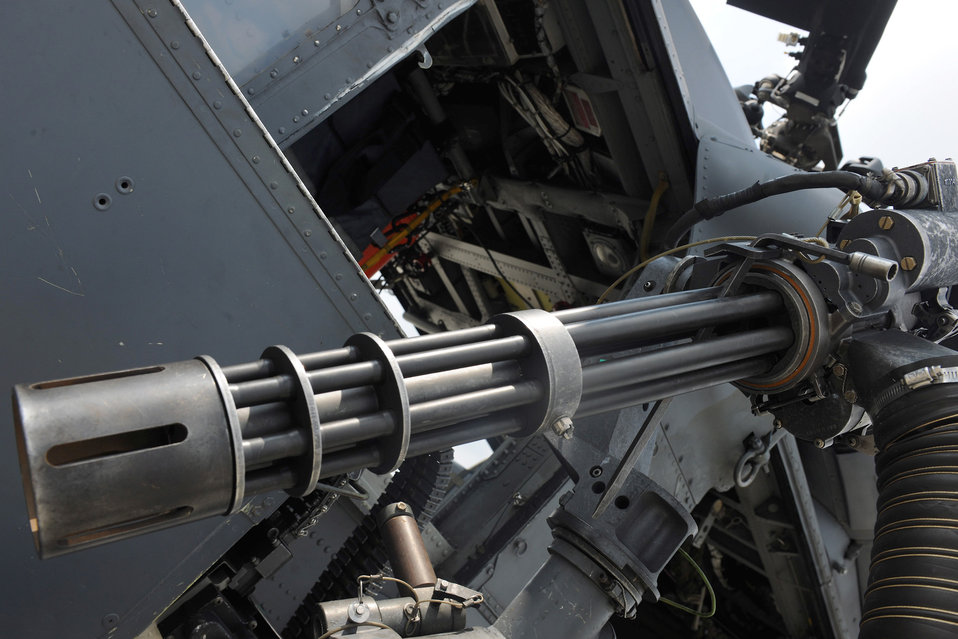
HH-60G munitions training

A 7.62-mm mini-gun sits on the side of an HH-60G Pave Hawk Aug. 25, 2010, at Moody Air Force Base, Ga. Each HH-60G is mounted with two mini-guns and each weapon has the capability to fire between 2,000 to 4,000 rounds per minute.